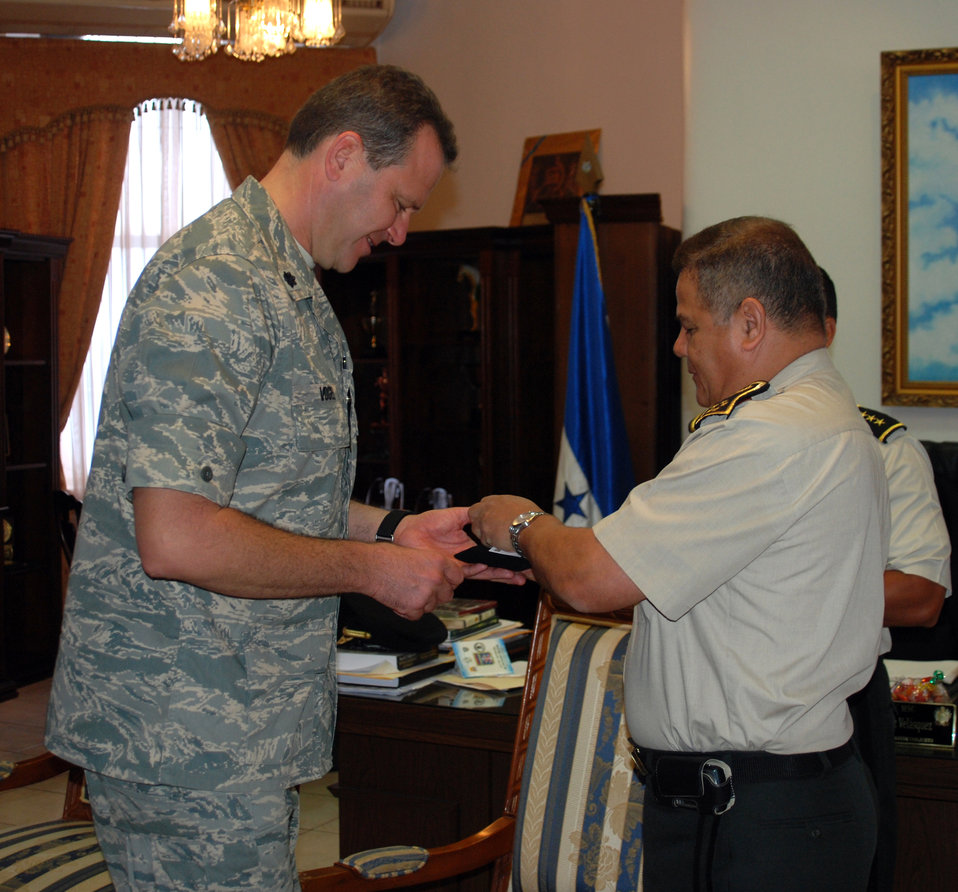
JTF-Bravo troops presented Honduran medals of merit

Air Force Lt. Col. Randall Vogel receives a coin from Honduran Chief of Defense, General de Division Romeo Orlando Vasquez Velasquez, during a ceremony May 5 in Tegucigalpa Honduras. Colonel Vogel and two others from JTF-Bravo receved Honduran Medals of Merit. Colonel Vogel is the 612th Air Base Squadron commander at Soto Cano Air Base, Honduras.